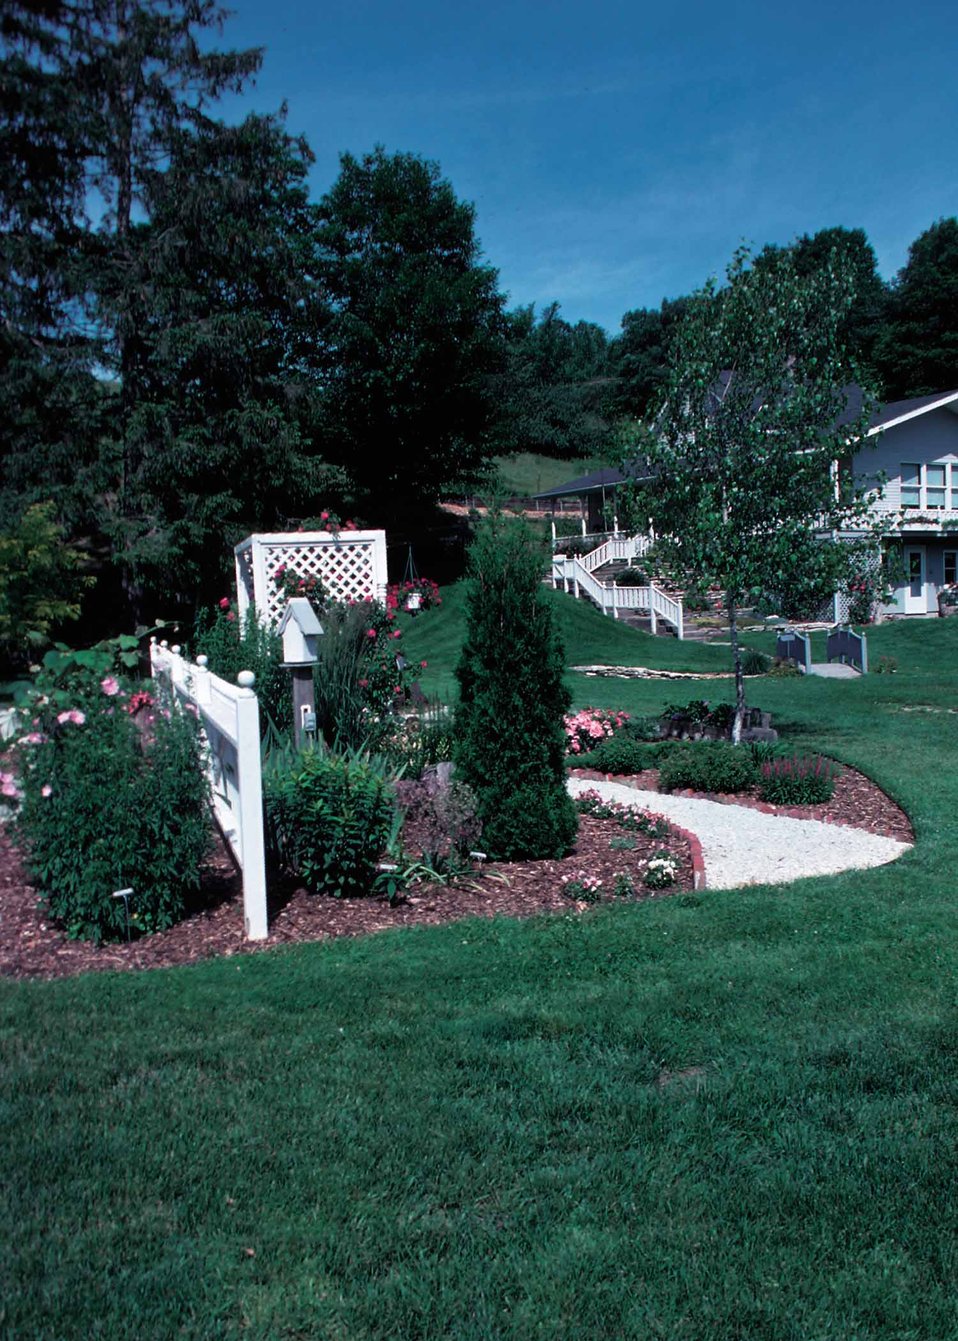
This northeast Iowa farmer practices conservation on his farm and in his backyard. Backyard conservation practices on a farm in northeast Iowa.